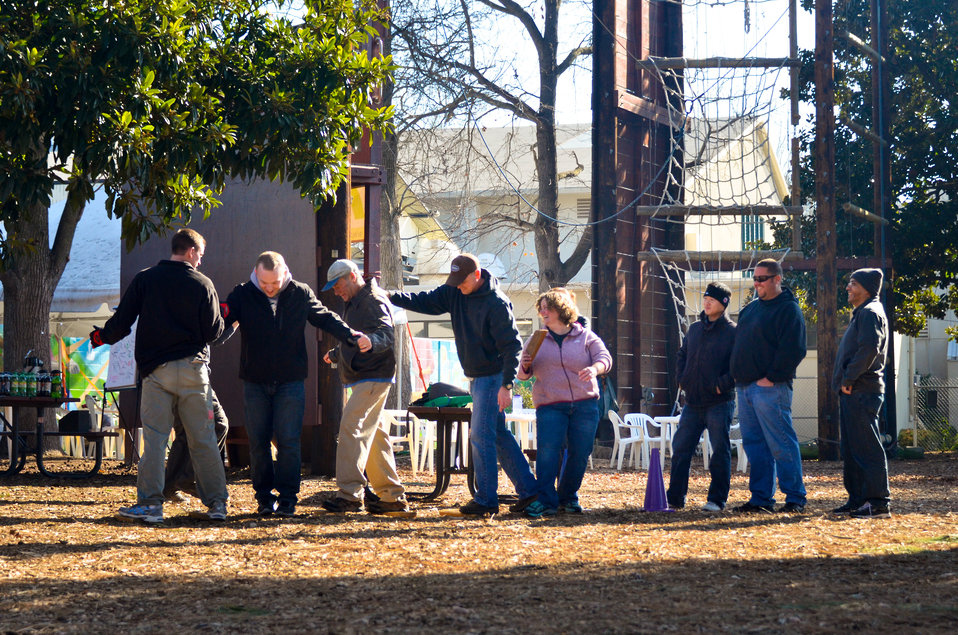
LDP level I ropes course activities

U.S. Army Corps of Engineers Sacramento District employees participate in ropes course activities at California State University-Sacramento, Jan. 16, 2013, as part of the district’s leadership development program.
The program is designed to introduce participants to the Army’s expertise in developing skilled, tested and character-based leaders at all levels and across all functional levels.